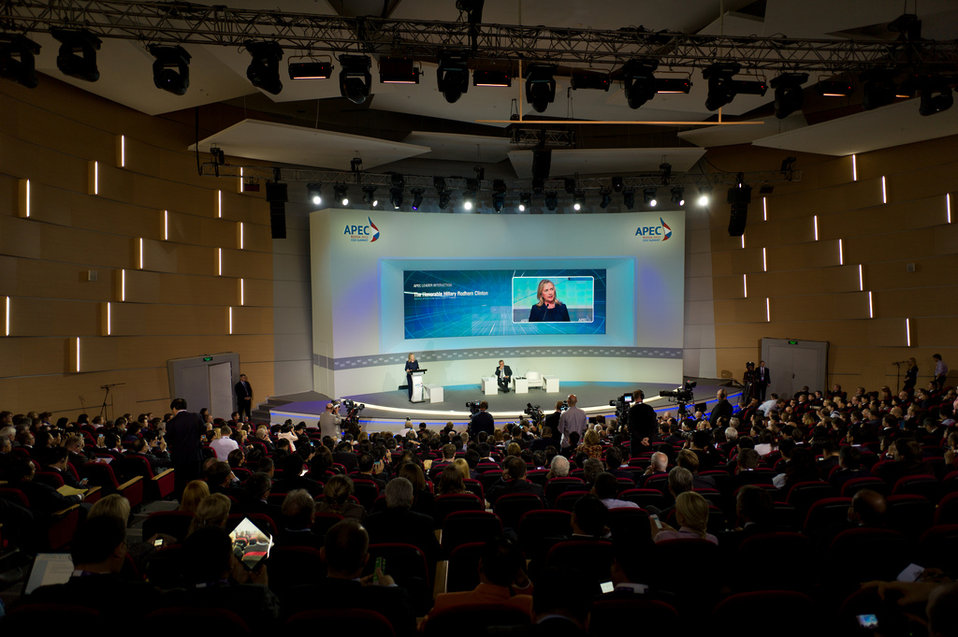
Secretary Clinton Speaks at the APEC CEO Summit

U.S. Secretary of State Hillary Rodham Clinton delivers remarks at the Asia-Pacific Economic Cooperation CEO Summit in Vladivostok, Russia, September 8, 2012.